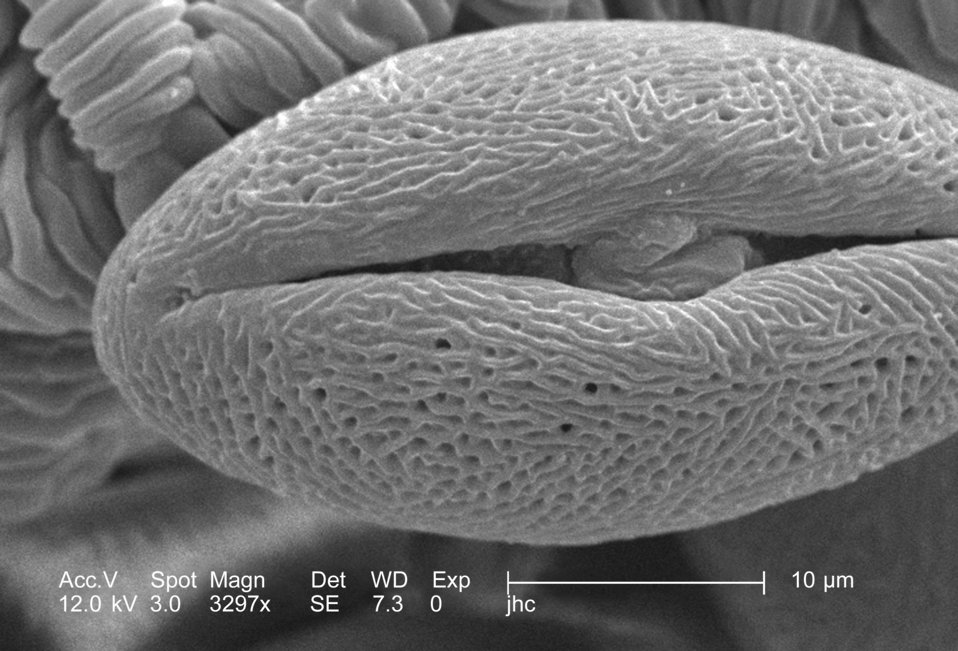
Under a very high magnification of 3297x, this scanning electron micrograph (SEM) revealed some of the morphologic ultrastructure displayed by a pollen grain found within the dehisced, or split open, anther of a yellow "Fireworks" sundrops, Oenothera fruticosa flower. This pollen grain was of the "tricolpate" type of pollen, which means that the outer surface was traversed from pole to pole, by three symmetrically placed furrows. The textured surface also identified this grain as a "reticulate" type. Note that the grain's shape was elliptical, indicating that it had undergone a drying process, and was ready to be disseminated into the plants environment.